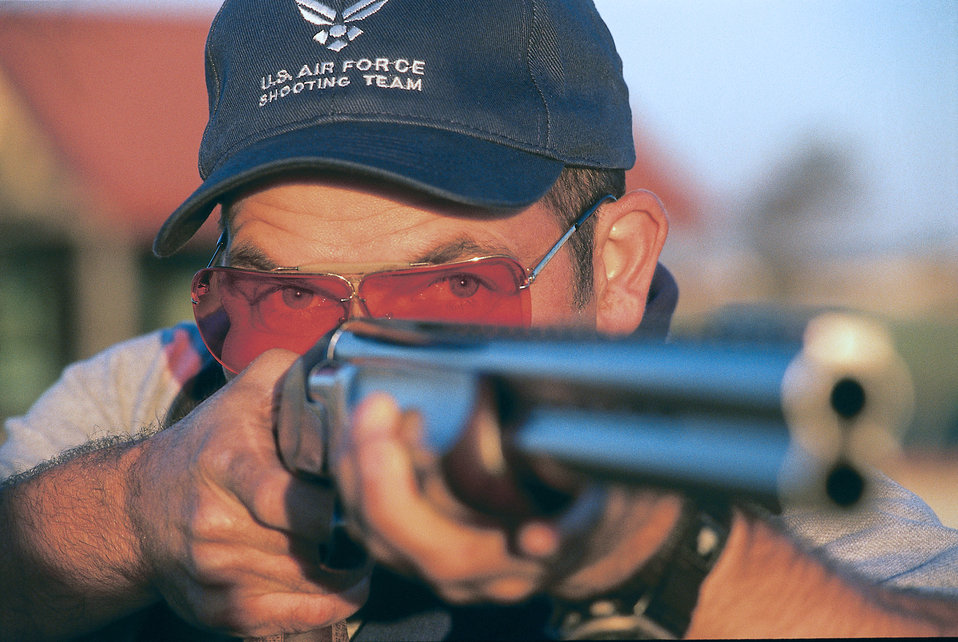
Air Force shooting team takes silver, bronze at trap match

FORT BENNING, Ga. -- Capt. Mike Herman takes aim during the 2005 Interservice Trap Championships here. He took the silver medal in the single-trap event and the bronze medal in the double-trap event. He is from Schriever Air Force Base, Colo.